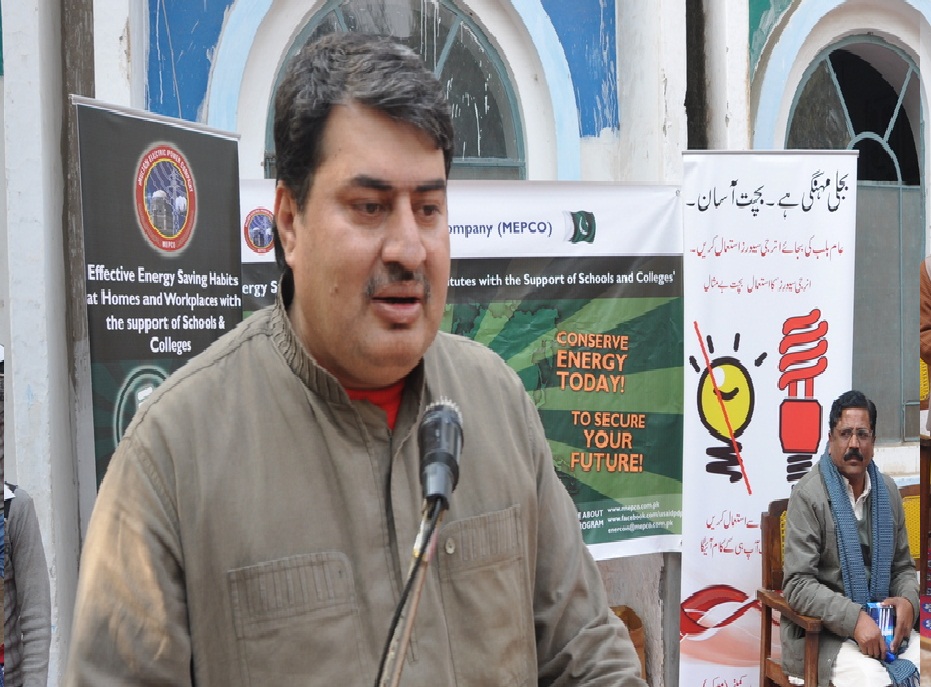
USAID Power Distribution Program-Energy Conservation Seminar at Govt. Bukhari Public School for Boys, Multan.

Multan, January 12, 2013-Principal of the at Govt. Bukhari Public School for Boys, Multan, motivated the students to adopt the practices addressed in the seminar and appreciated the efforts made by USAID Power Distribution Program to spread such productive awareness among the young generation of Pakistan